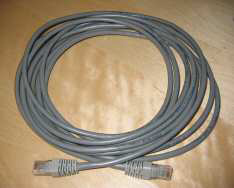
10baseT cable